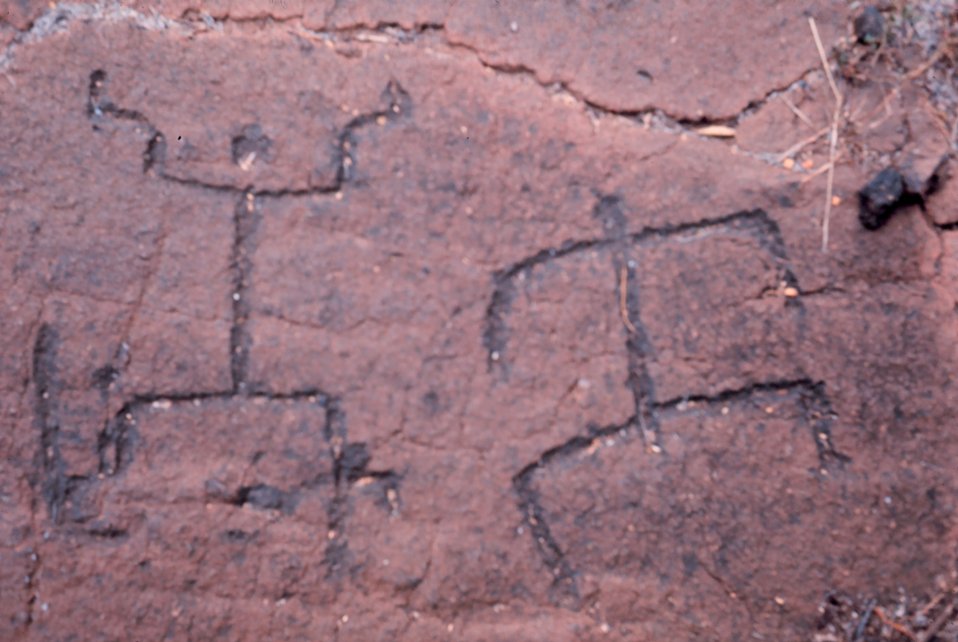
Petroglyphs